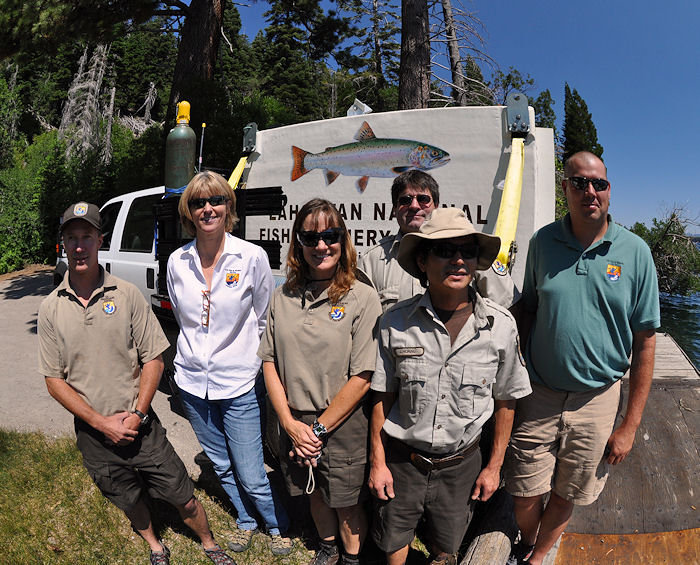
Lahontan Nat'l Fish Hatchery team

Lahontan National Fish Hatchery team released more than 8,000 Lahontan cutthroat trout in Fallen Leaf Lake, Tahoe Basin, Calif., September 10, 2010.